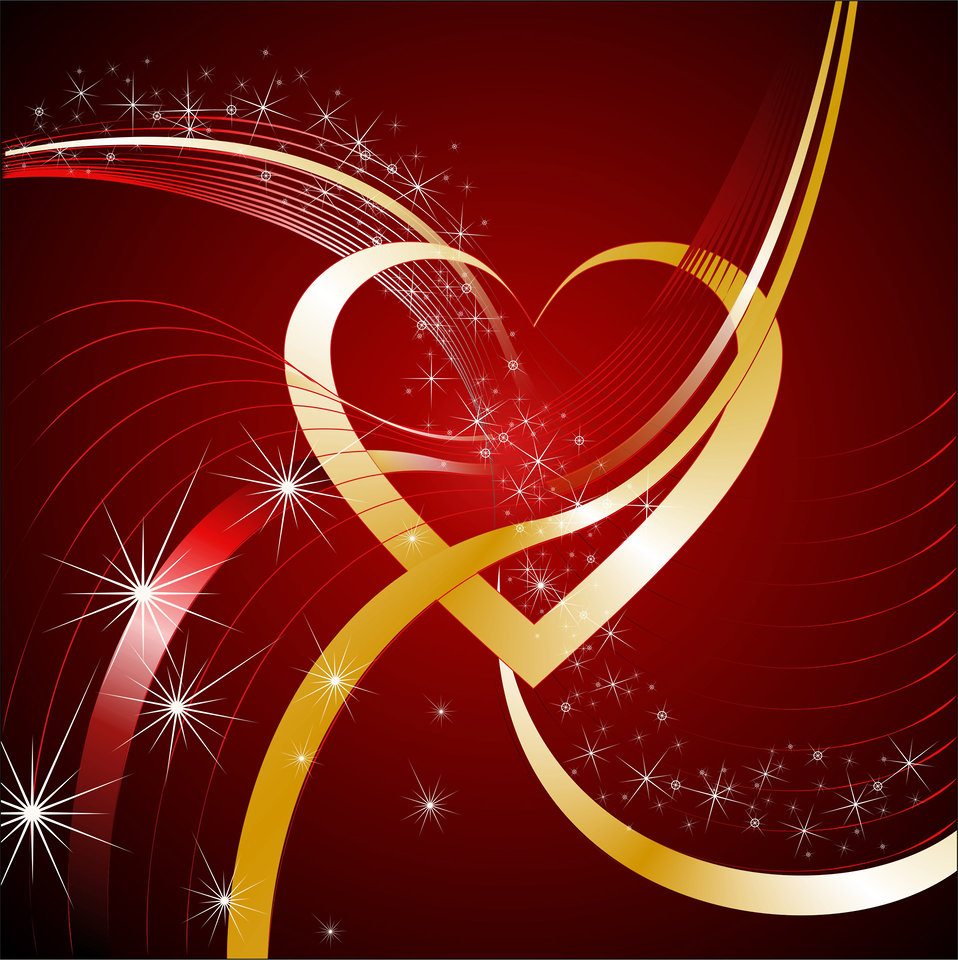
Bright background with heart

Abstract background with heart and lines with stars.